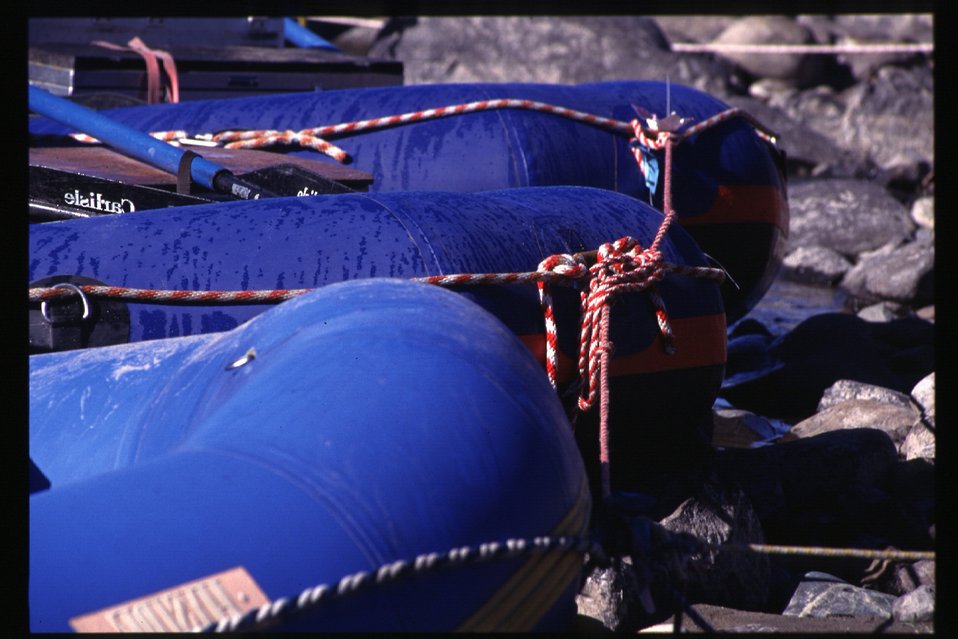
Boat launch Rafts Lower Salmon River Cottonwood Field Office UCSC Upper Columbia Salmon Clearwater District